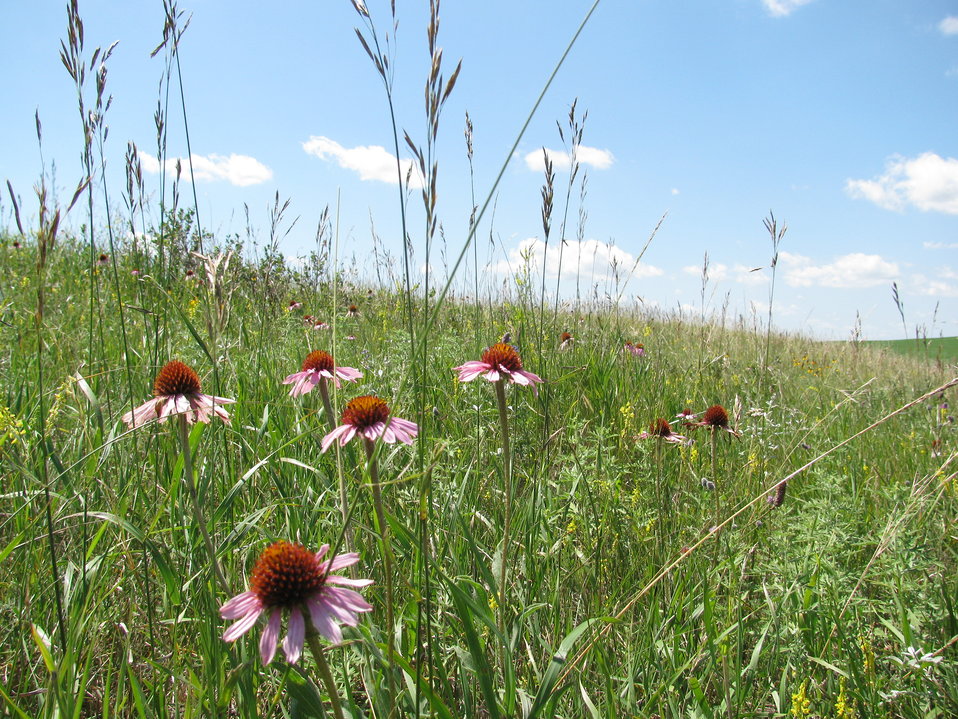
Purple Coneflower

These native summer flowers are usually found on rocky or poorly-developed soils on hillsides. They are also known by the name 'Black Sampson'.